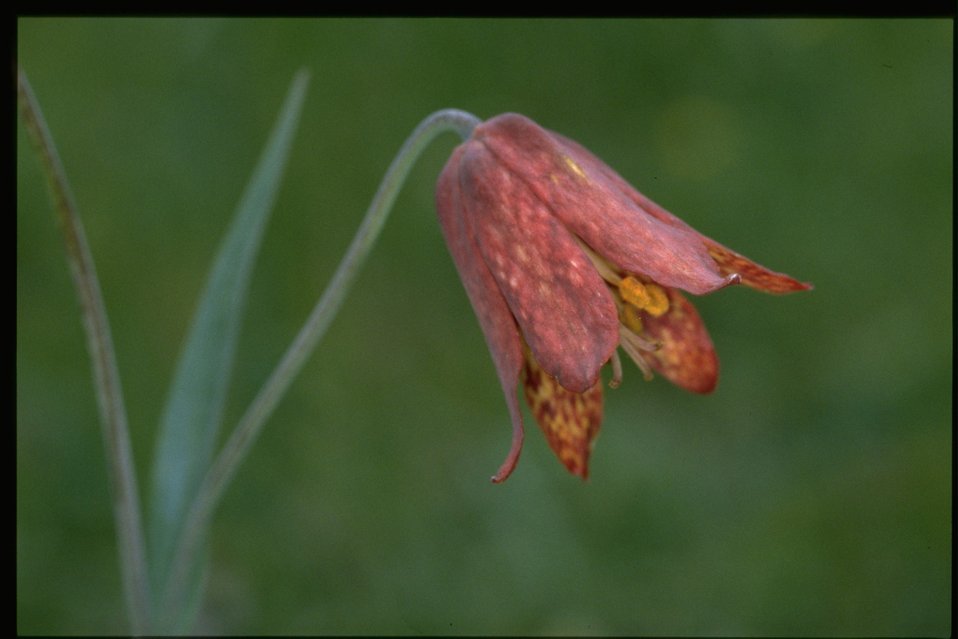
Closeup shot of Gentner's Fritillary, Fritillaria gentneri.